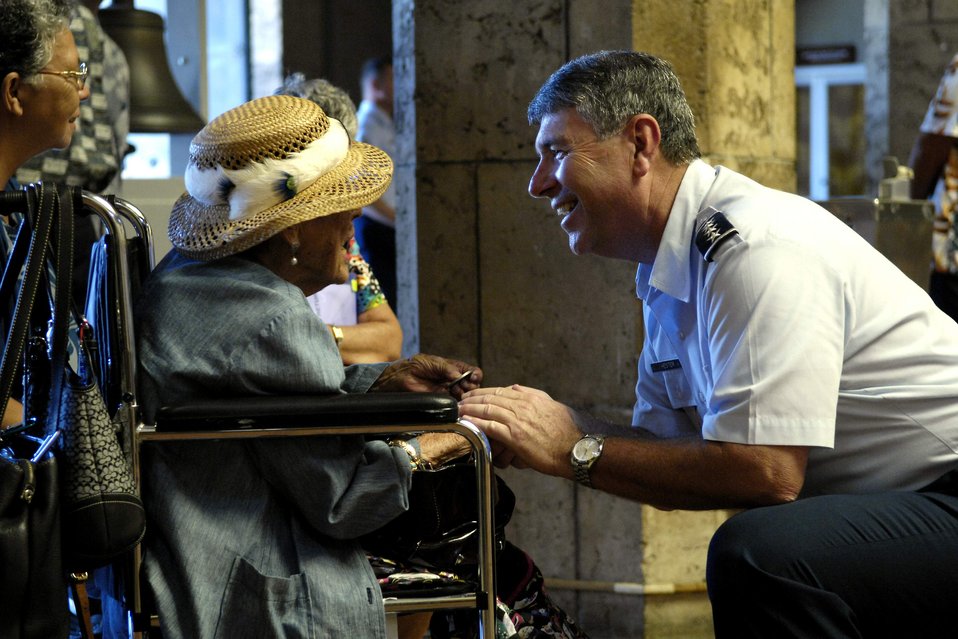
Air Force Week Honolulu kicks off

Gen. Paul V. Hester talks with Mary Mbotelho after the mayor of Honolulu proclaimed Air Force Week Honolulu Sept. 9 at the Honolulu Hale in Hawaii. Mufi Hannemann, mayor for the city and county of Honolulu, proclaimed Sept. 7 through 15 as Air Force Week in Honolulu. General Hester is the commander of Pacific Air Forces.